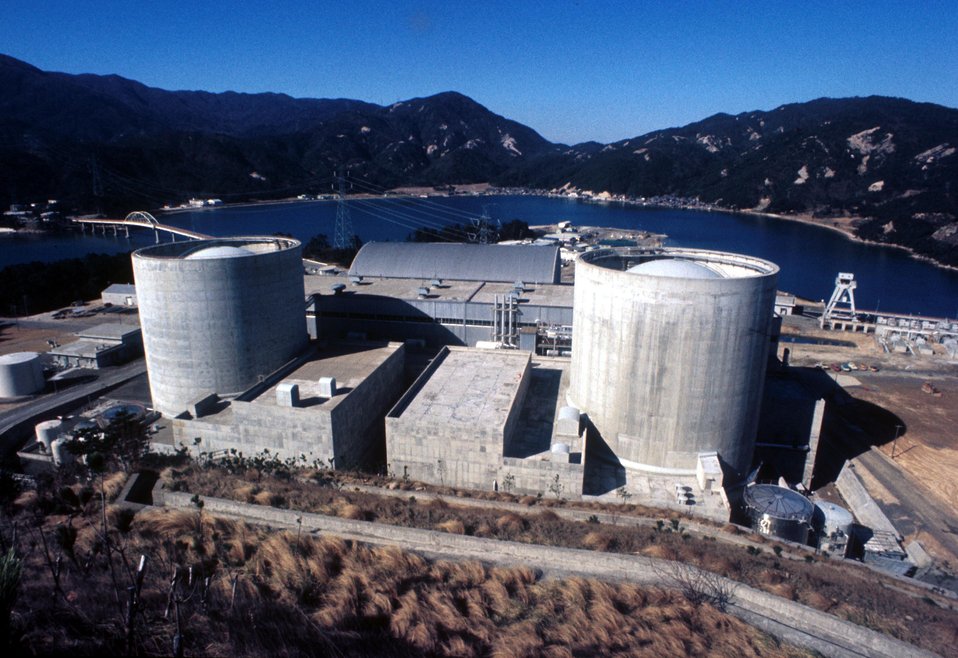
Kansai Plant #1, Mihama, Japan. Kansai Nuclear Reactor.